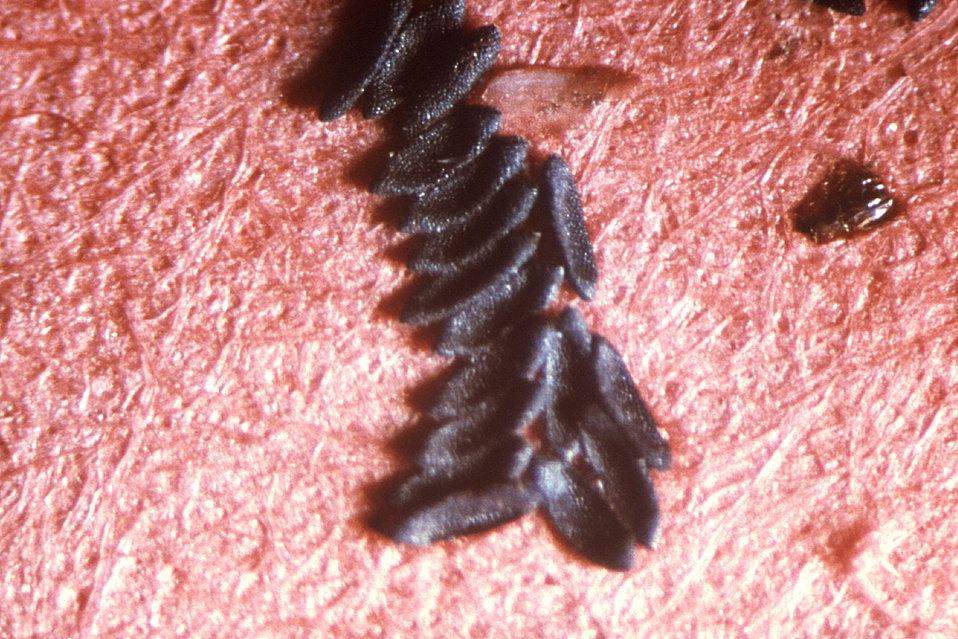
This photograph depicts a group of mosquito eggs deposited by a female Aedes triseriatus mosquito upon velour paper; Mag. 250x.